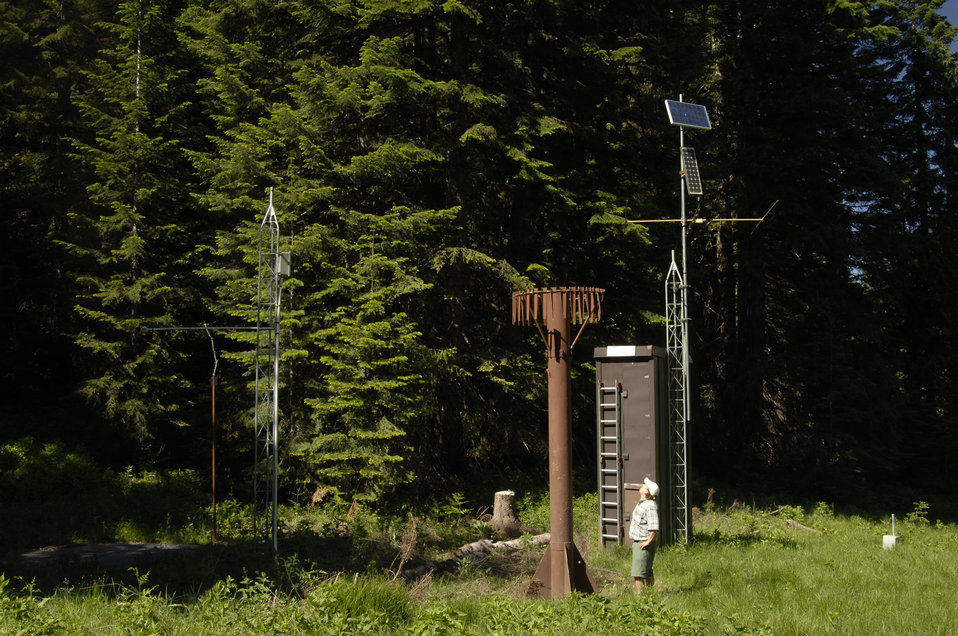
University of Idaho Associate Professor for Hydrology in the College of Natural Resources Dr. Timothy Link looks over the U.S. Department of Agriculture’s (USDA) Natural Resource Conservation Service (NRCS) Snow Telemetry (SNOTEL) site in the Mica Creek Experimental Watershed near Moscow, Idaho on July 8, 2008. The SNOTEL sites are used to provide projections of snow water resources each year. The station was installed to support the Mica Creek project, which was designed to assess the effects of contemporary forest harvest practices on aquatic ecosystems.